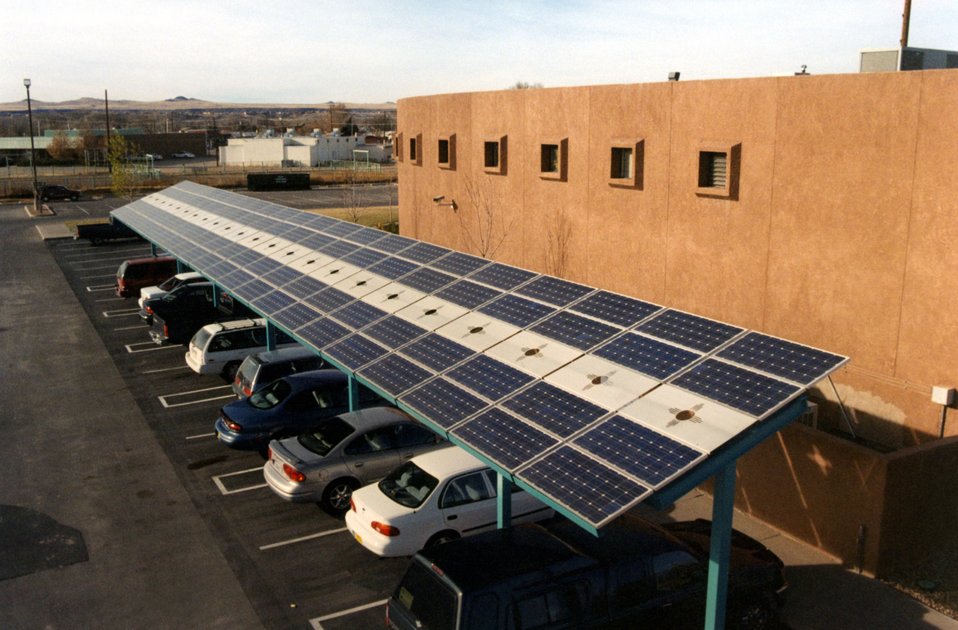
Solar carport

This solar carport at the Indian Pueblo Cultural Center in Albuquerque, New Mexico, stands ready to impress some 400,000 visitors each year. The system delivers about 23 megawatt hours of clean electricity annually to the local utility grid (Public Service Company of New Mexico), making it the largest commercial PV system in New Mexico. Diversified Systems Manufacturing, a Native American owned and operated PV development company, was the contractor. The New Mexico Department of Energy, Minerals, and Natural Resources funded the project. Engineers from Sandia National Laboratories were responsible for the project's electrical design review. The project is the brainchild of Dave Melton, president of DSM and a tribal member of the Laguna Pueblo. It is also part of the Million Solar Roofs initiative, which seeks to place solar energy systems on one million roofs in the United States by 2010.